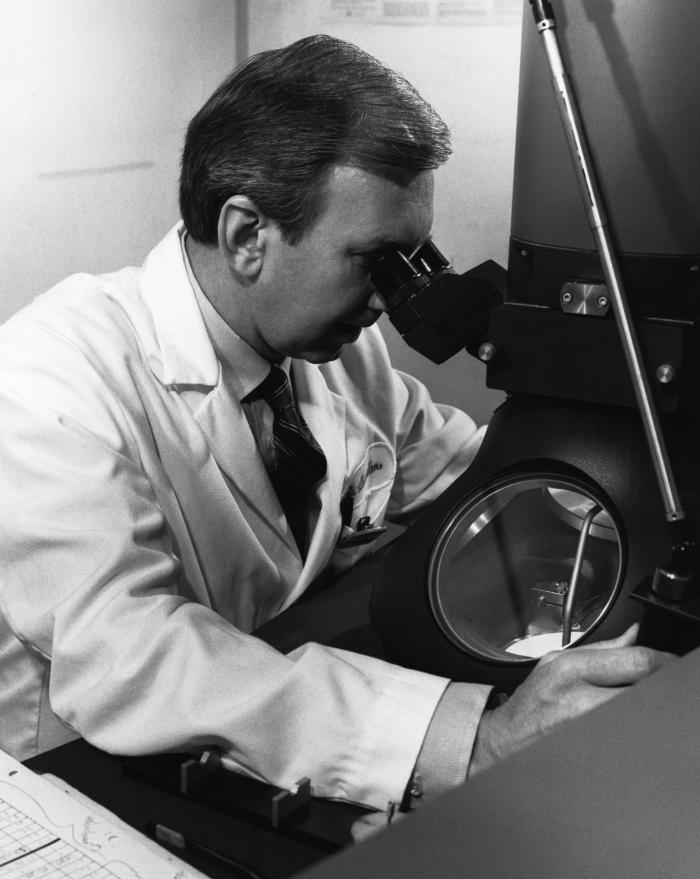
Francis Chandler, D.V.M., Ph.D., former Chief of the Experimental Pathology Branch at the Centers for Disease Control and Prevention, was shown here using a transmission electron microscope (TEM) to identify changes in ultrastructural morphology within cells.